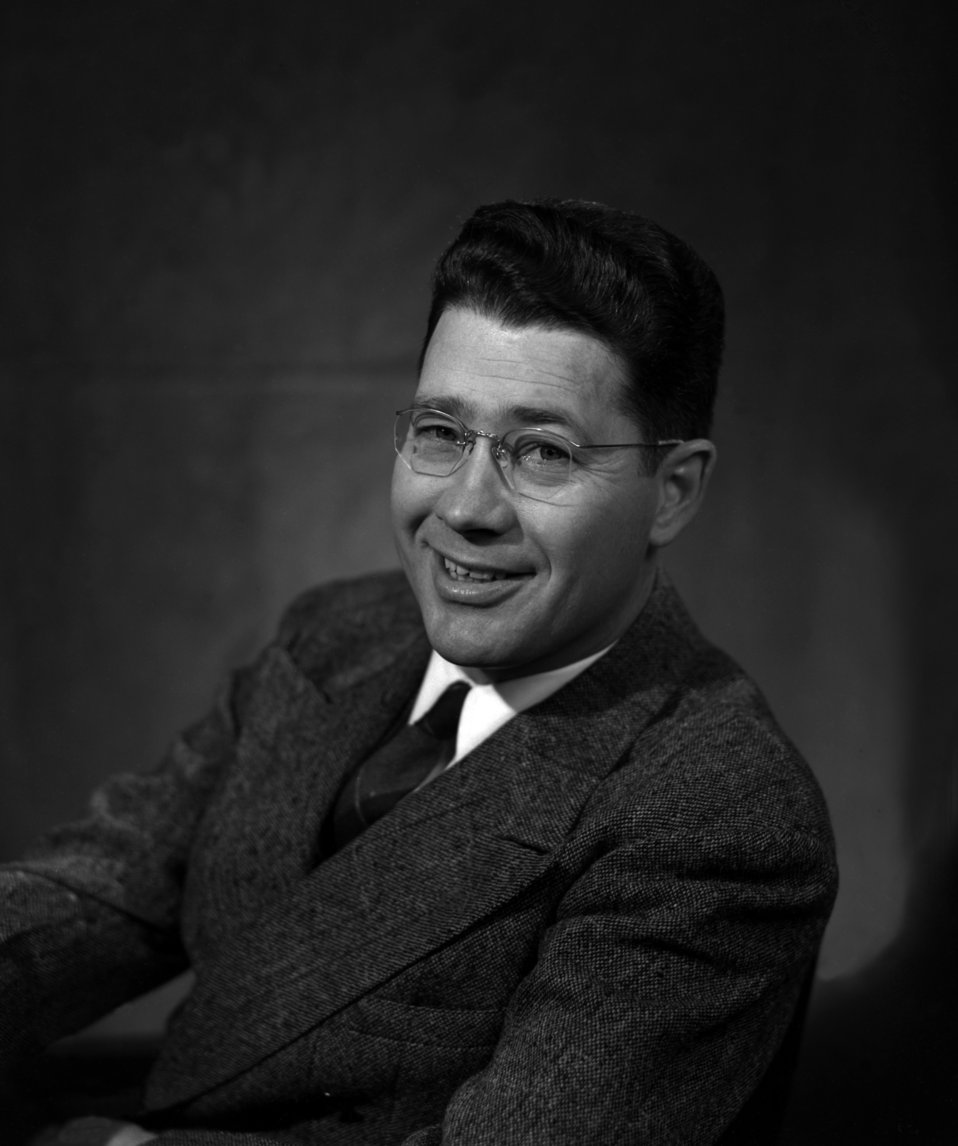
Bill Bradshaw Oak Ridge

3270-2 DOE photo Ed Westcott Oak Ridge Tennessee